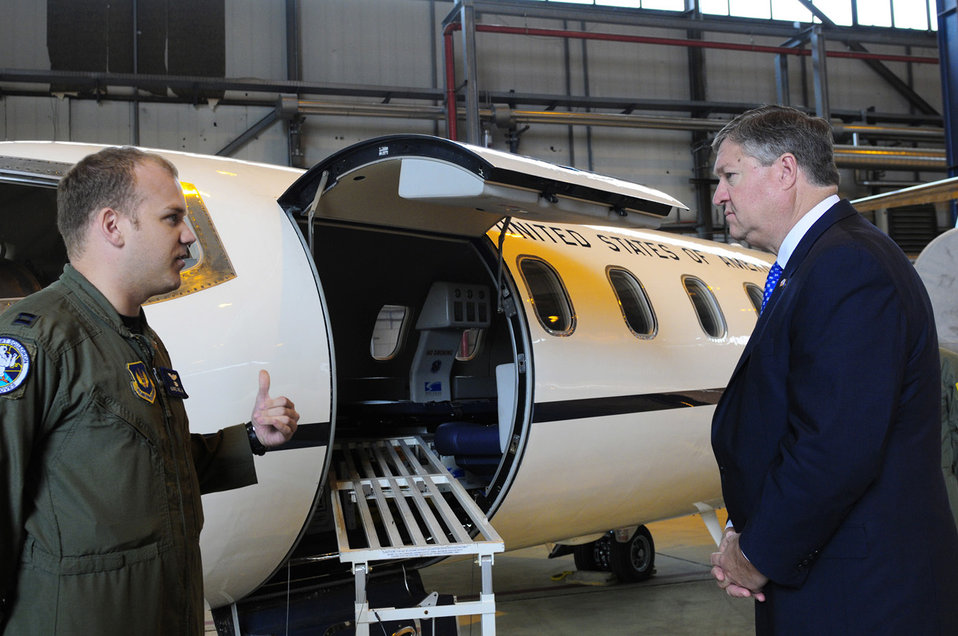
SecAF at Ramstein

Capt. Daniel Helland briefs Secretary of the Air Force Michael Donley June 18, 2011, on C-21A aircraft aeromedical evacuation operations at Ramstein Air Base, Germany. The secretary traveled to Europe to meet with Airmen and receive updates from command leaders on U.S. Air Forces in Europe efforts to build partnership capacity and ongoing contingency support for Operation Unified Protector. Captain Helland is assigned to the 76th Airlift Squadron.